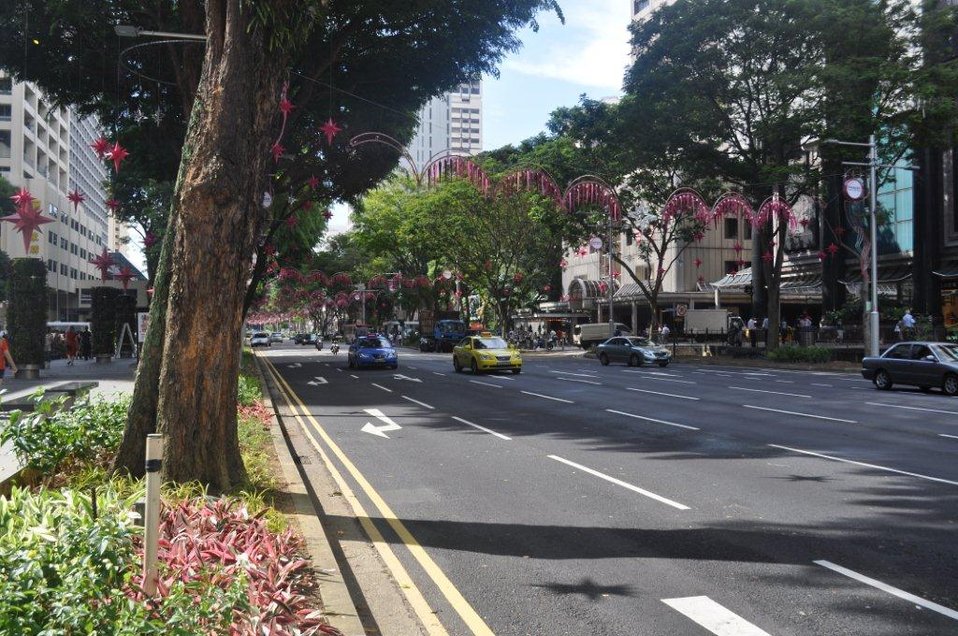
Geithner visit to Asia, November 4-12, 2010

Singapore's famous Orchard Road